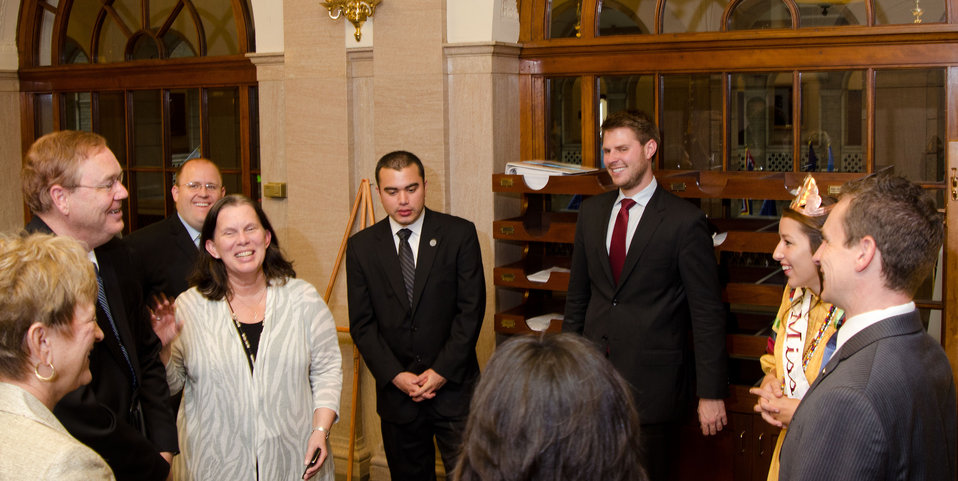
Miss Cherokee 2010-2011 Brooke Hudson and officers of the Cherokee nation met with U.S. Department of Agriculture staff members in Washington, DC, on Tuesday, August 9, 2011 USDA Photo by Lance Cheung.